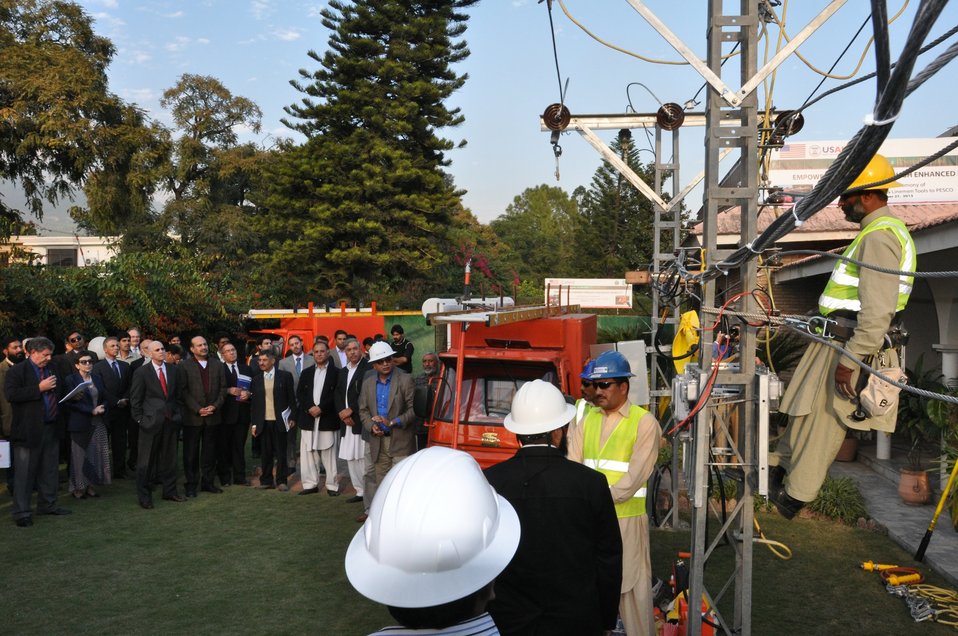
United States Government Strengthens PESCO Field Operations 19